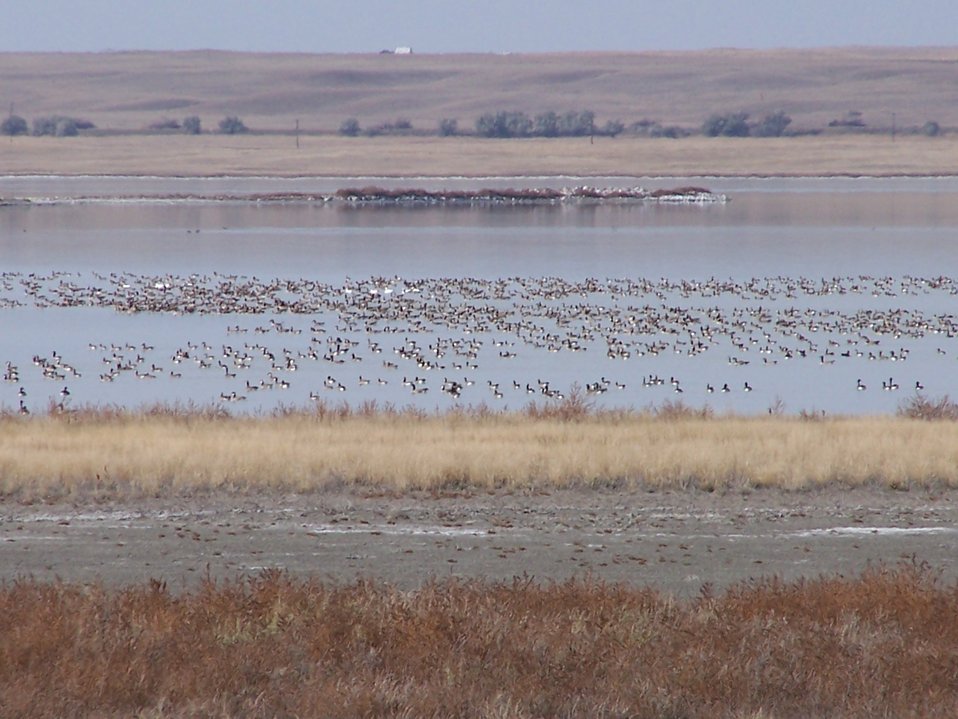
Birds on Lake Bowdoin, Bowdoin NWR

Canada geese and tundra swans flock up in anticipation of migration onward. Bowdoin NWR.